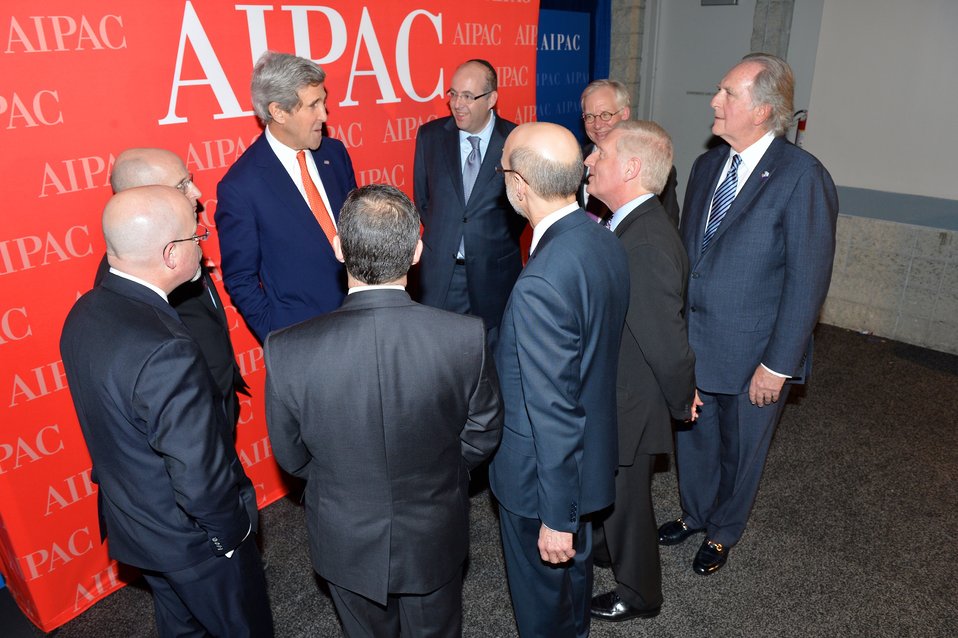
Secretary Kerry Meets With AIPAC Leaders

U.S. Secretary of State John Kerry meets with leaders of the American Israel Public Affairs Committee (AIPAC) Conference at the Washington Convention Center in Washington, D.C., on March 3, 2014.